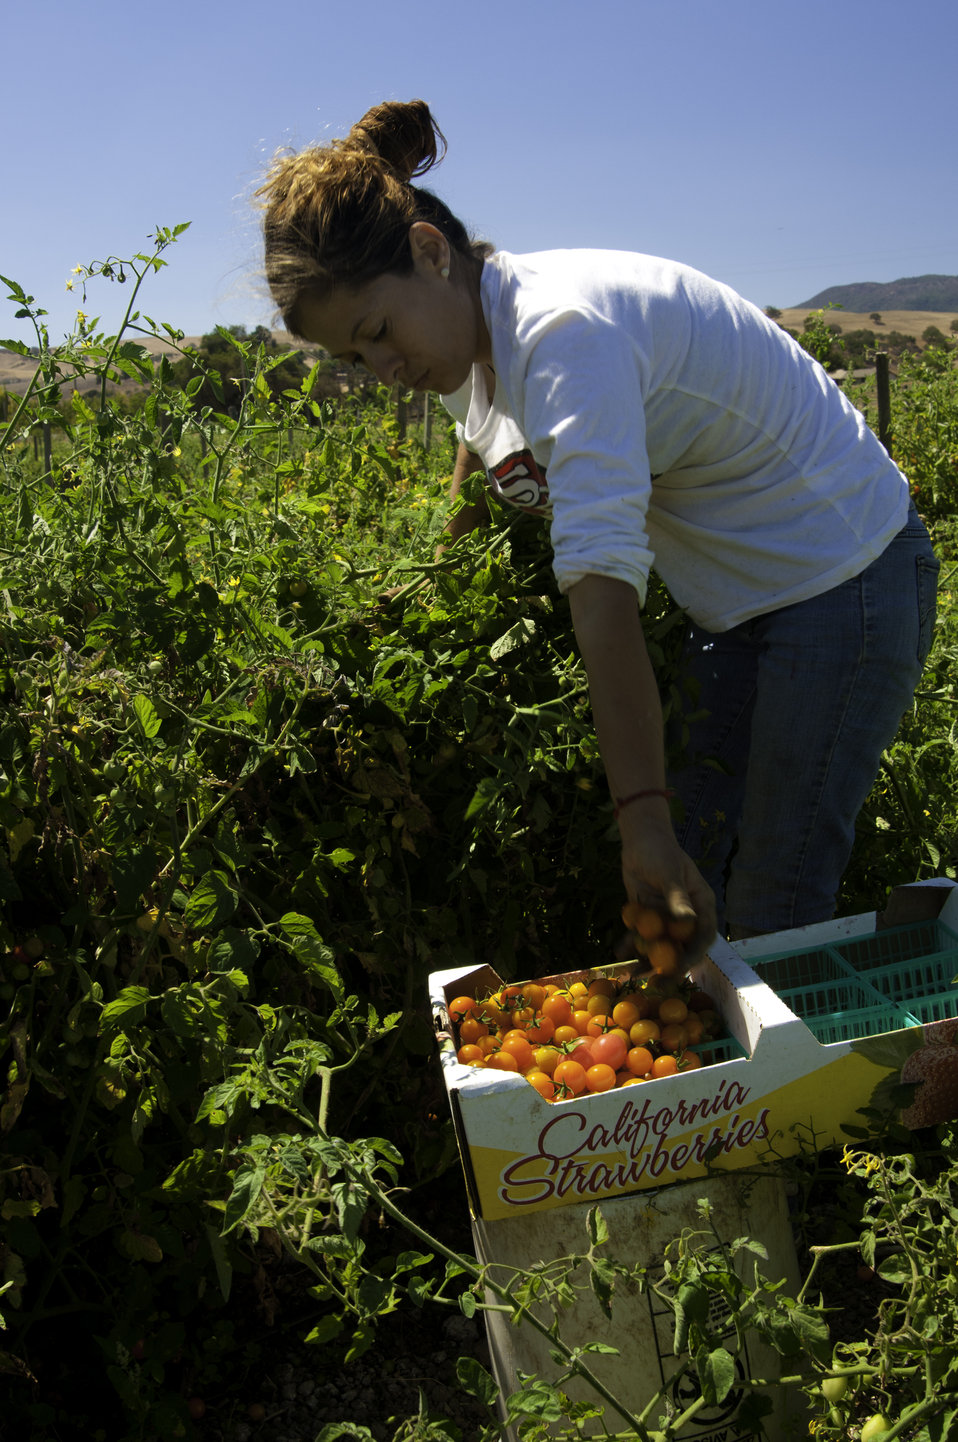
Migrant workers harvest tomatoes on Uesugi Farms in Gilroy, CA on Wednesday, Aug. 28, 2013.